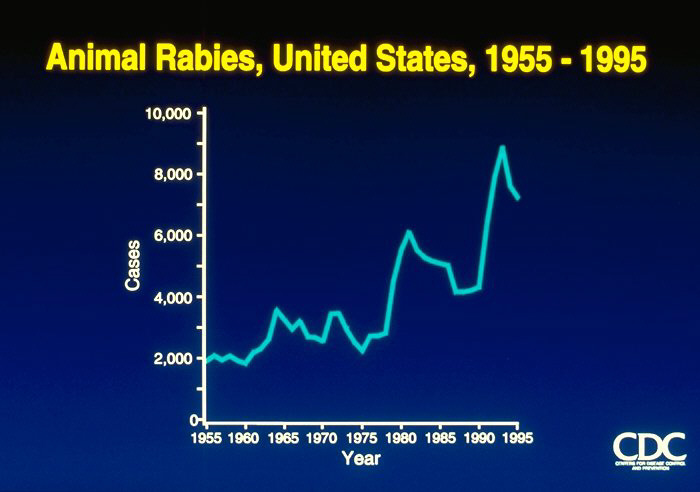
Animal Rabies, United States, 1955-1995 (graph).